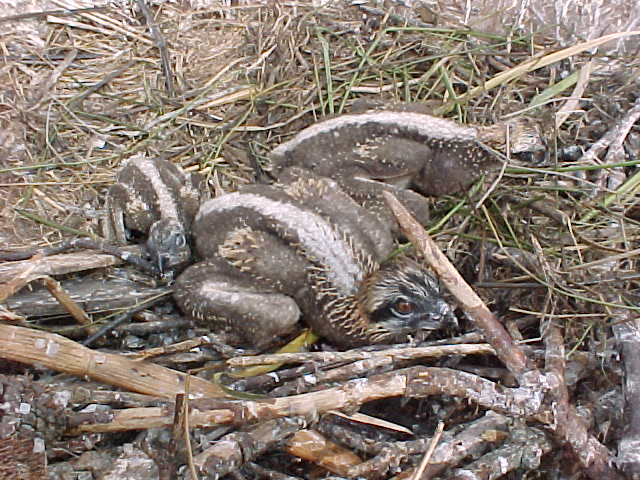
Osprey chicks at Back Bay National Wildlife Refuge in Virginia.